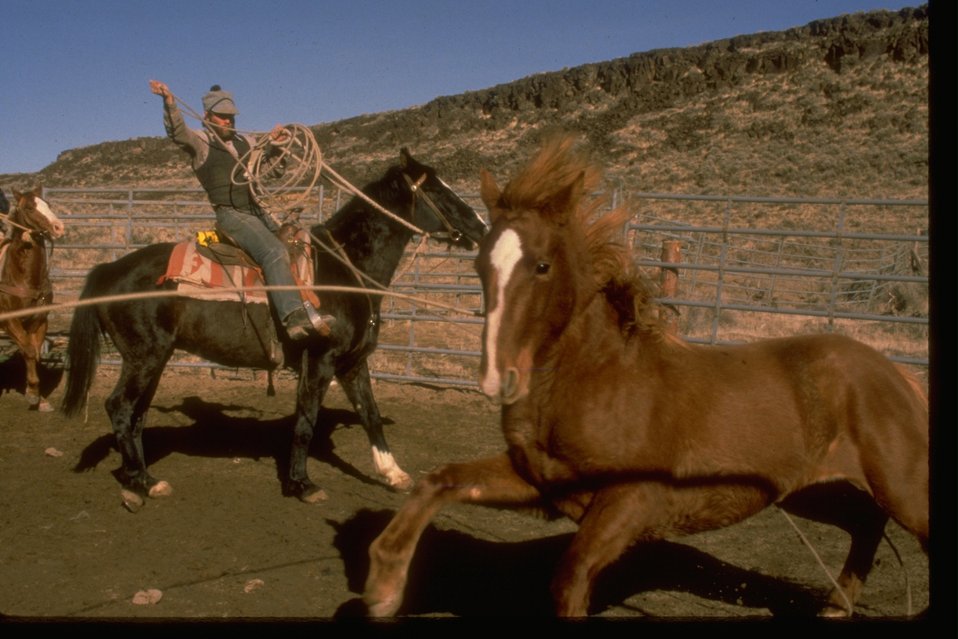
Wild Horse is rounded up for adoption.